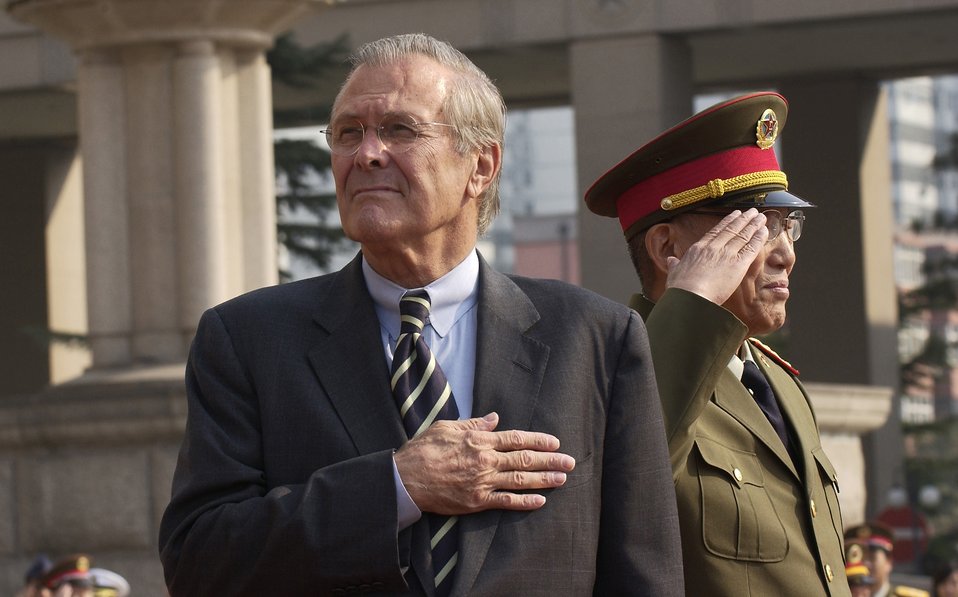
East meets West

BEIJING -- Secretary of Defense Donald H. Rumsfeld and Gen. Cao Gangchuan, vice chairman of the central military committee, and China's minister of defense, show their respect during the playing of their countries' national anthems at the Bayi Building here. Secretary Rumsfeld traveled to China Oct. 19 to meet with military and civilian leaders and discuss U.S.-China defense relationships and cooperation in areas of common interest.